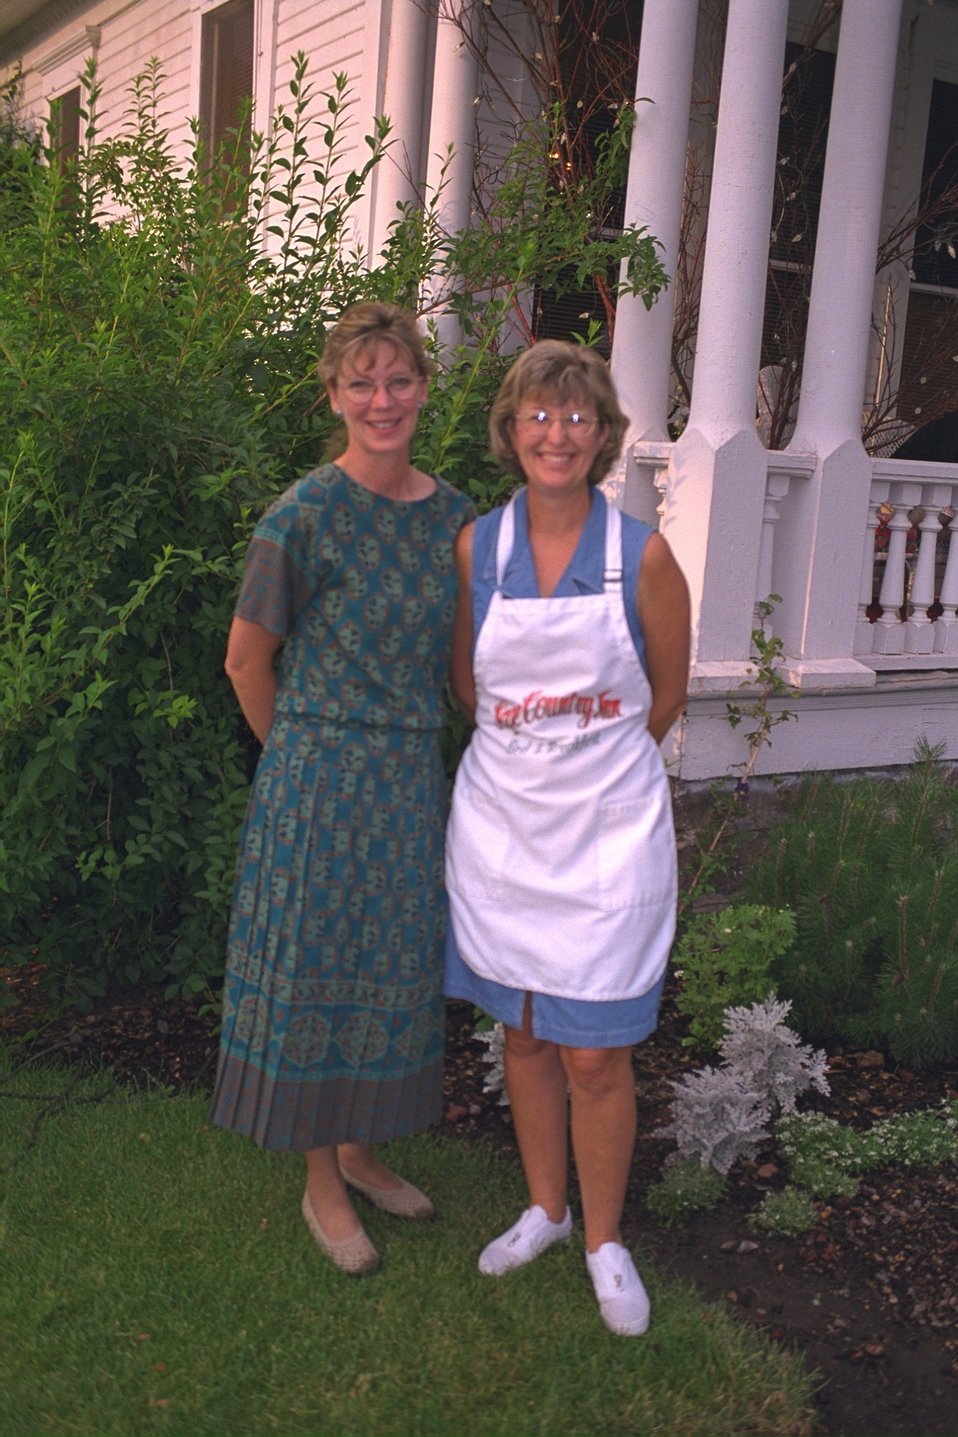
(L - R) Georgia Marshall and Susan Pielstich, the proprietors of the Sage Country Inn, Burns, OR.